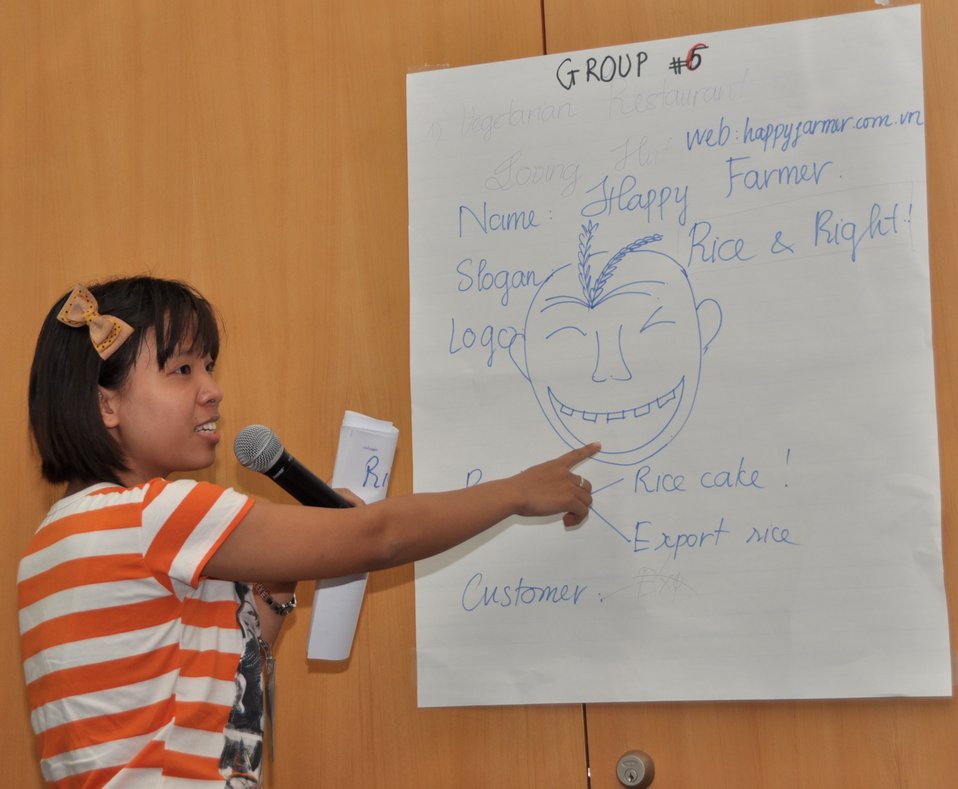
Vietnamese university students join the Business Plan Mashup exercise

Photo: @USAIDVietnam, November 16, 2012